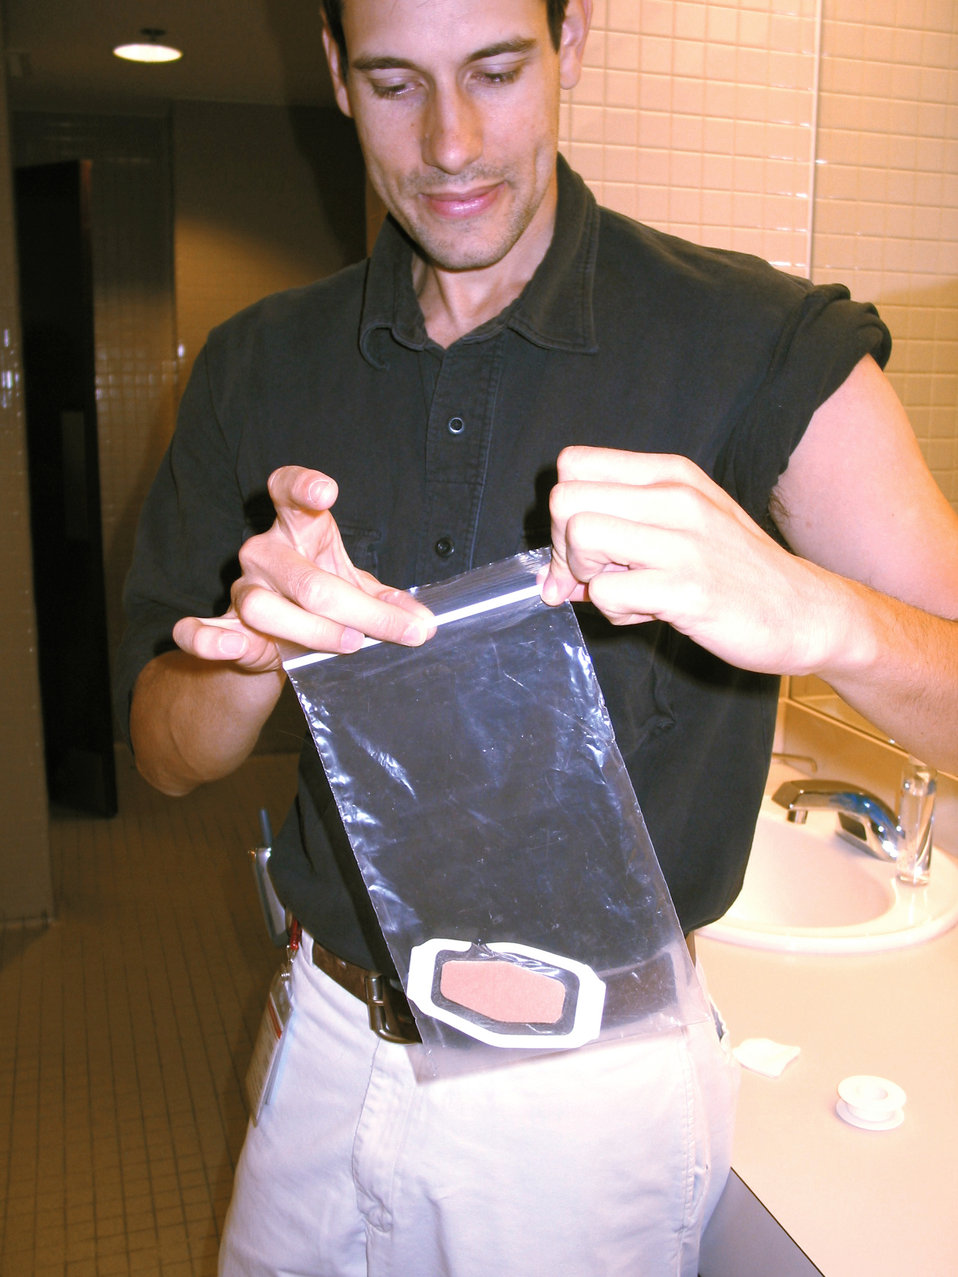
This smallpox vaccinee is shown properly placing a contaminated waterproof bandage into a sealable plastic bag.